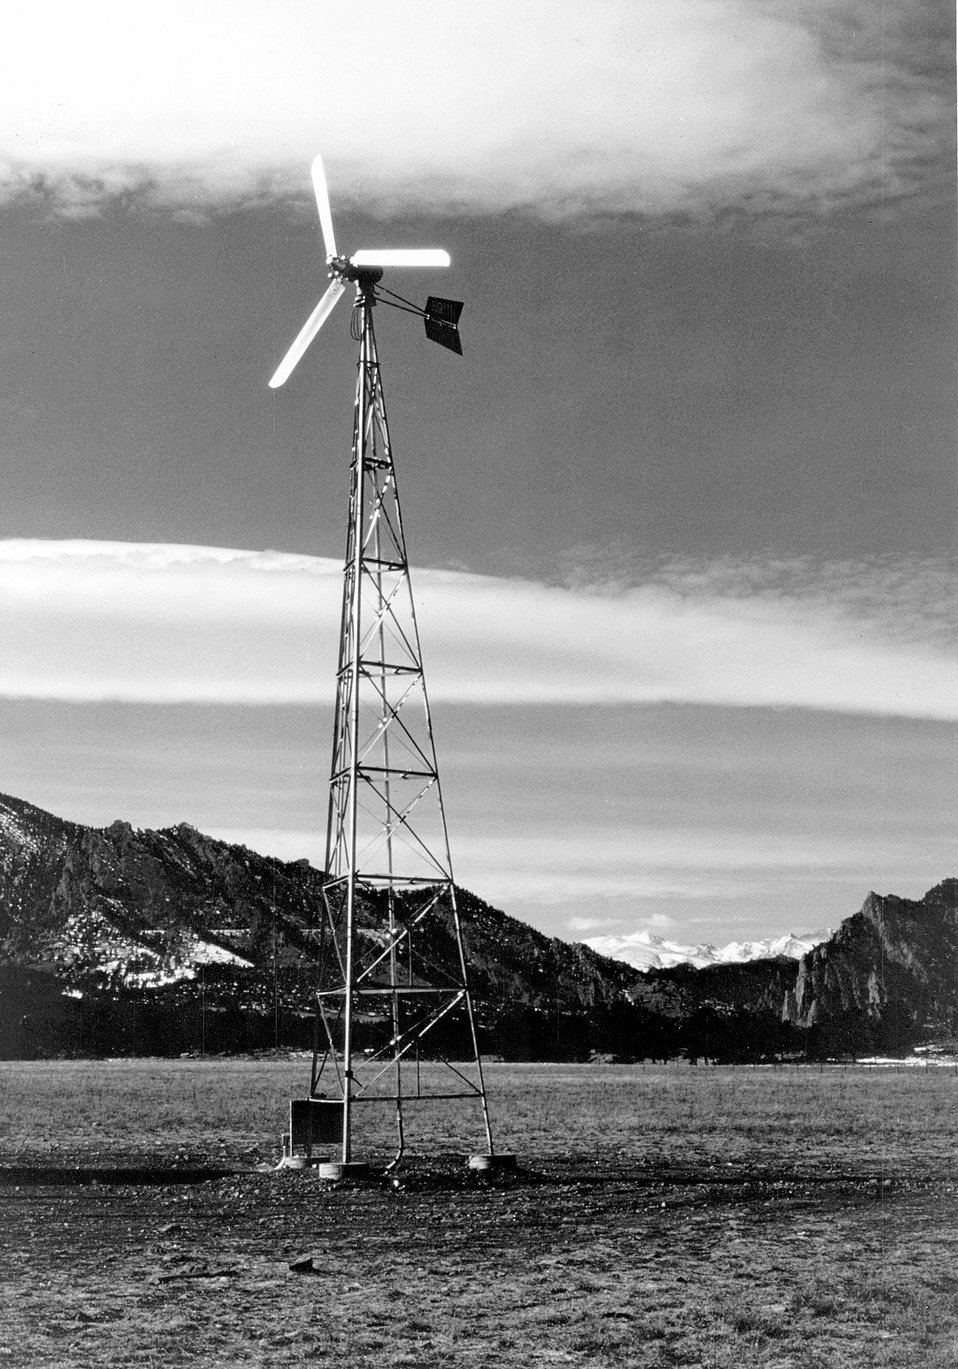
The Dunlite wind turbine, with 3 blades and a 12-foot rotor diameter, is being tested at the Energy Research and Development Administration's (ERDA) Rocky Flats, Colorado facility. c. 1977